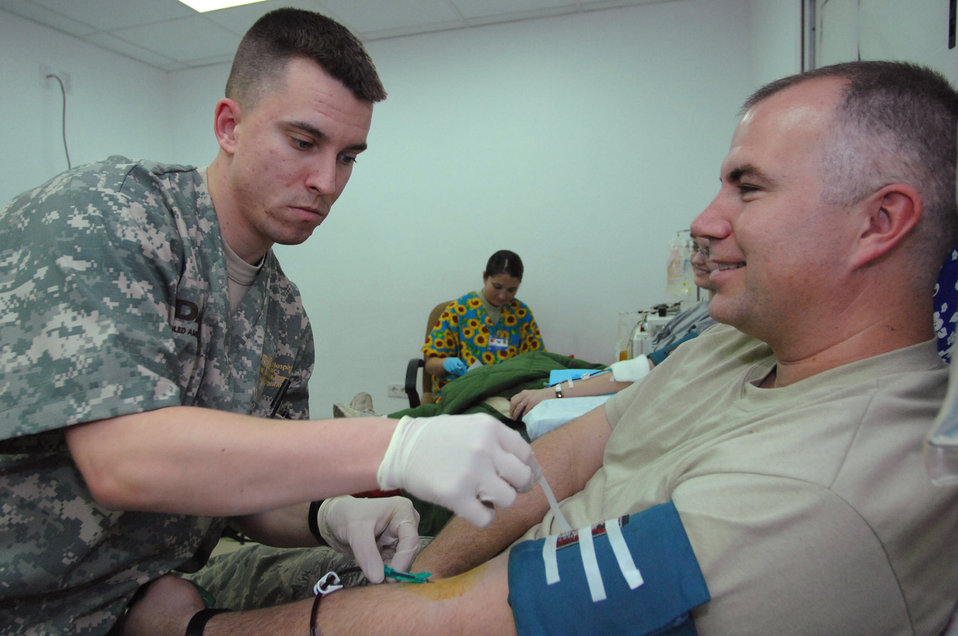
Providing safer blood products faster to wounded warriors

Army Spc. Lamar Elwell inserts a needle into the arm of Tech. Sgt. Jeff Ribelin before starting the platelet donation process Jan. 28 at the Air Force Theater Hospital at Balad Air Base, Iraq. The process of blood platelet donation differs from whole-blood donation because the patient is hooked up to a machine that processes the blood, extracting the red blood cells. The red blood cells are collected along with a small amount of blood plasma; the rest of the blood is returned to the patient with a small amount of anticoagulant agent. Specialist Elwell is a 153rd Blood Support Detachment medical lab technician deployed from Fort Lewis, Washington. Sergeant Ribelin is a 332nd Expeditionary Medical Support Squadron biomedical repair technician deployed from MacDill Air Force Base, Fla.